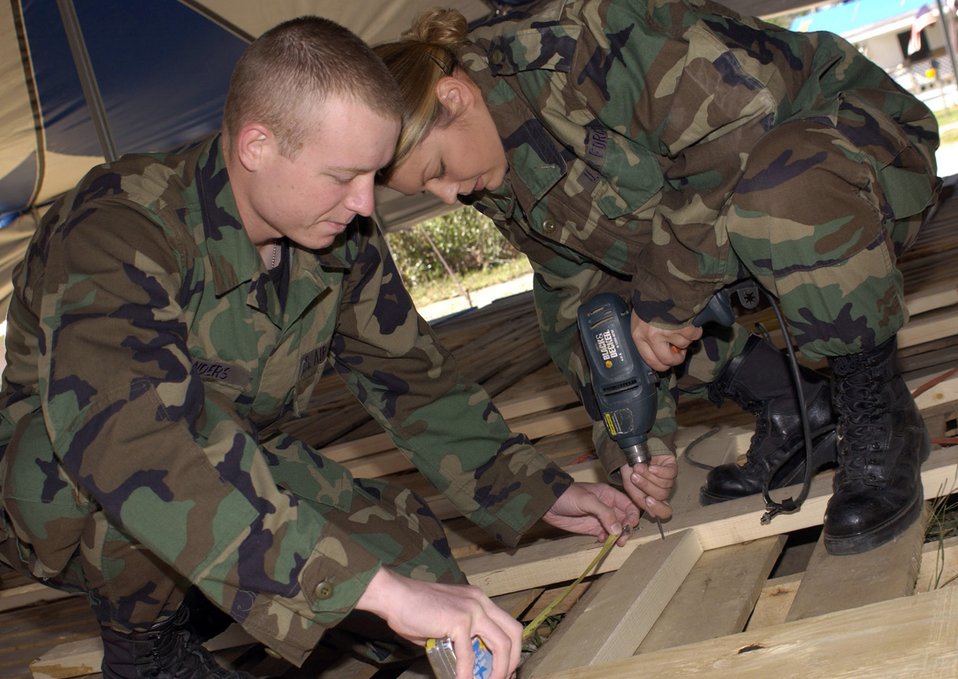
Hurricane relief efforts

BILOXI, Miss. (AFPN) -- Airman Basic Brian Sanders (left) and Airman Basic Jessica Allen secure floor boards for a tent. The will shelter relief workers at Good Shepherd Lutheran Church in Biloxi, Miss. The Airmen are with the 335th Training Squadron.